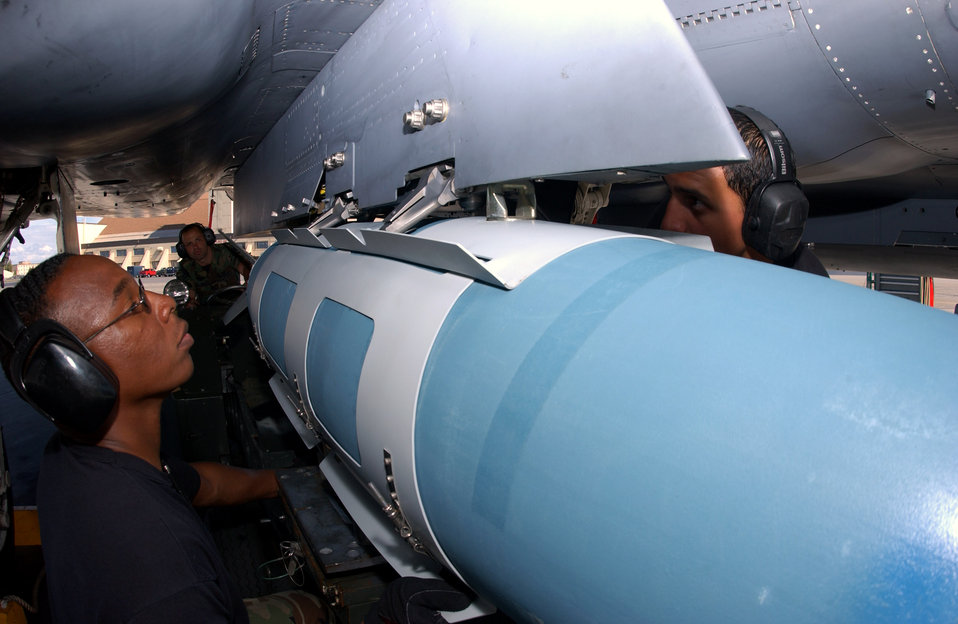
Strike Eagle fully loaded

(From left) Staff Sgt. Ray Saunders, Airman 1st Class Scott Perish and Airman 1st Class Santiago Mosquera load a guided bomb unit-31 bomb onto an F-15 Strike Eagle at Eielson Air Force Base, Alaska, July 24 during Red Flag-Alaska 07-3. The Airmen are weapons armament system specialists with the 4th Aircraft Maintenance Squadron at Seymour Johnson Air Force Base, N.C.